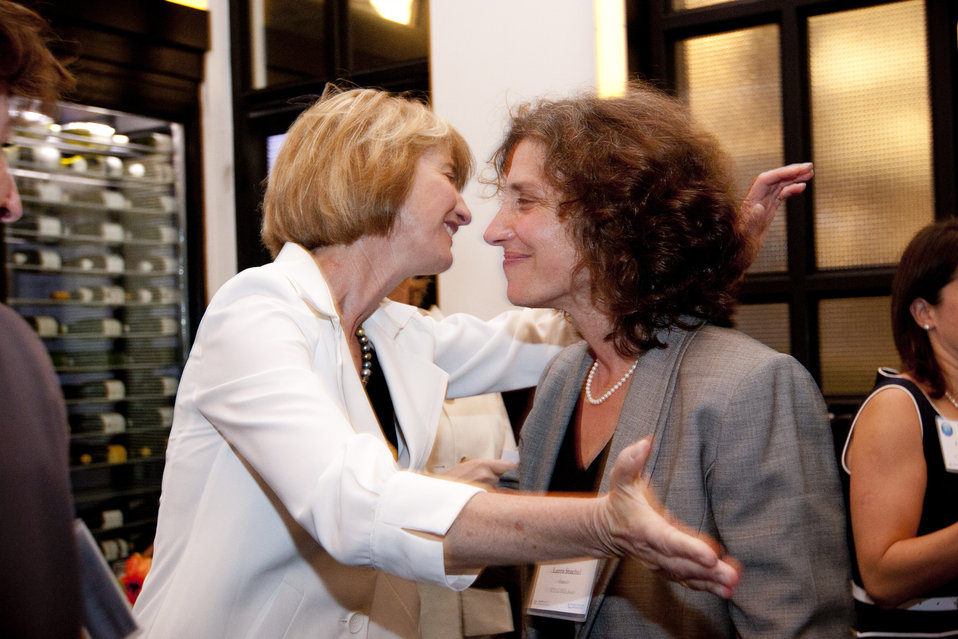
WomenandEnergy 09